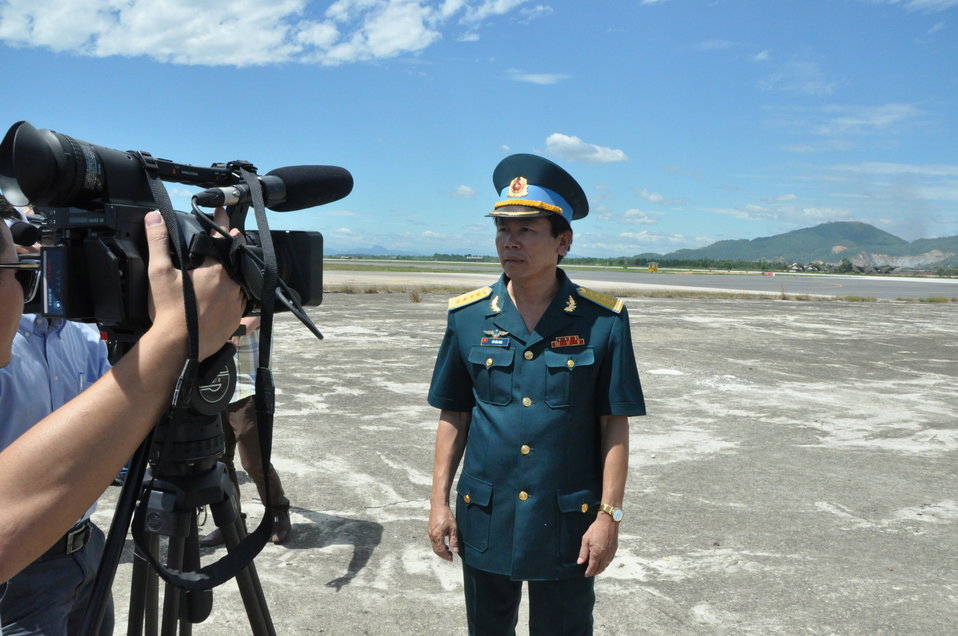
Environmental Remediation of Dioxin Contamination at Danang Airport Project Launch

Danang, August 9, 2012